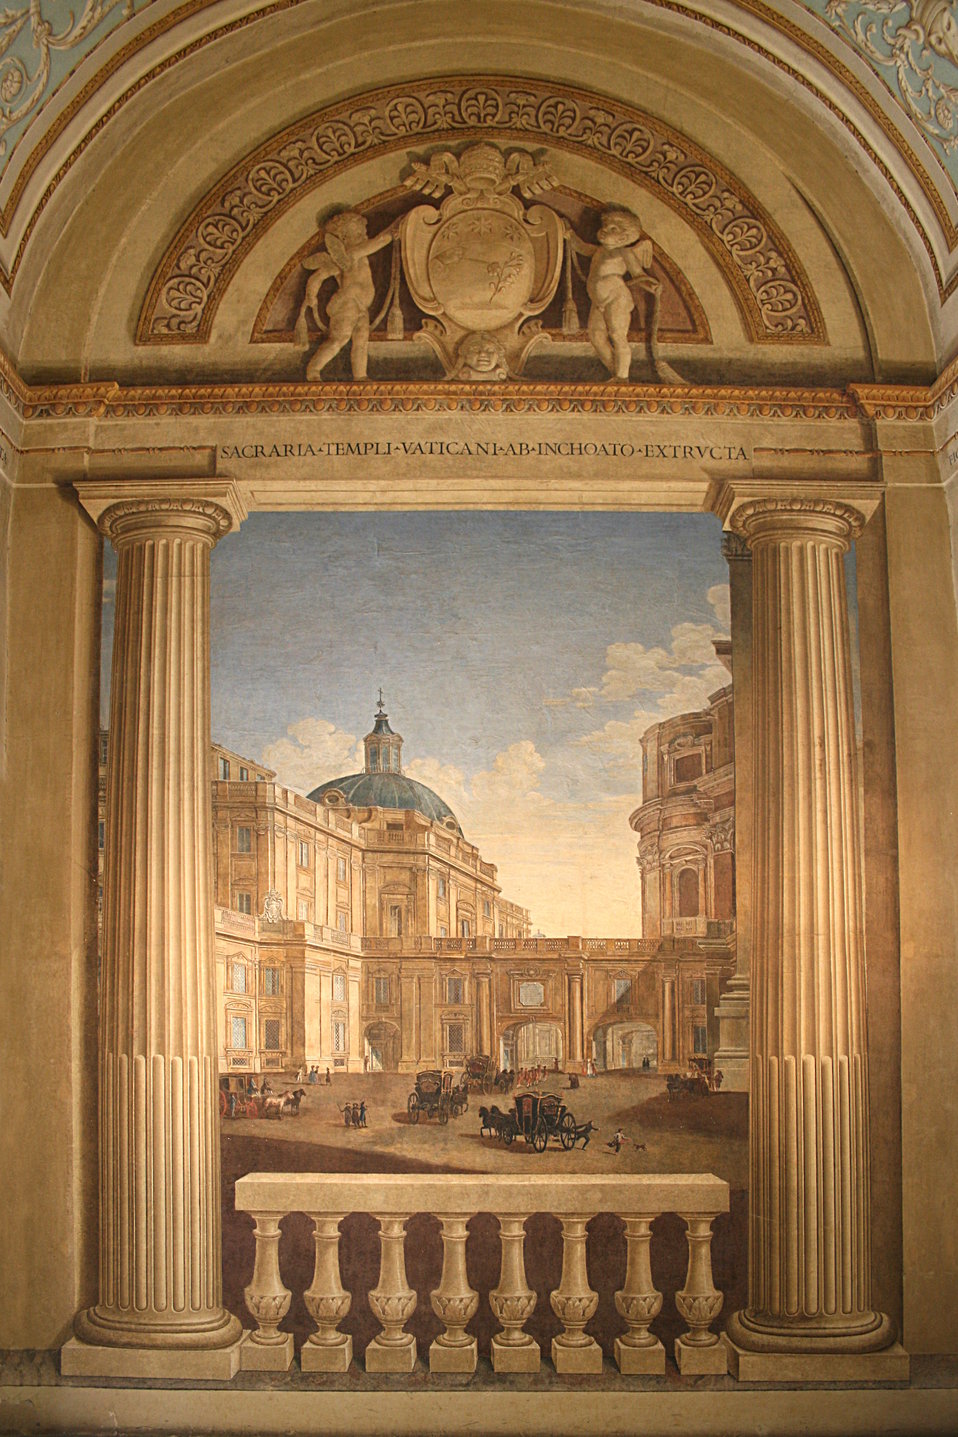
0 Sacraria templi Vaticani - B. Nocchi (1780) - Mus. Gregoriano Etrusco XIX